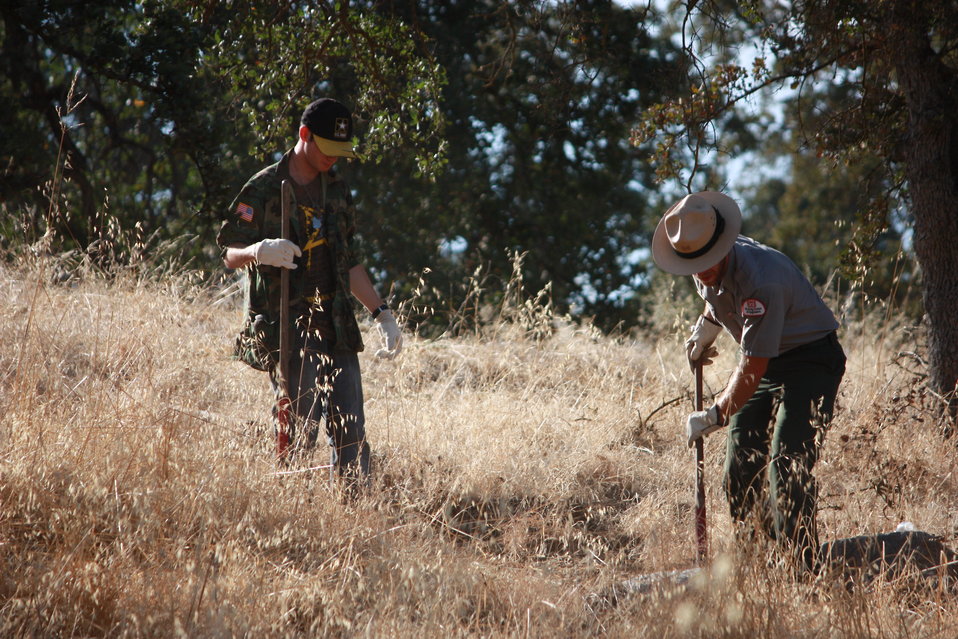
National Public Lands Day at Hensley Lake

U.S. Army Corps of Engineers park ranger Andy Steele (right) helps a young volunteer clear brush from a hiking trail at Eastman Lake, Calif., Sept. 24 in celebration of National Public Lands Day. Eastman was one of seven U.S. Army Corps of Engineers Sacramento District recreation parks that participated in the event.